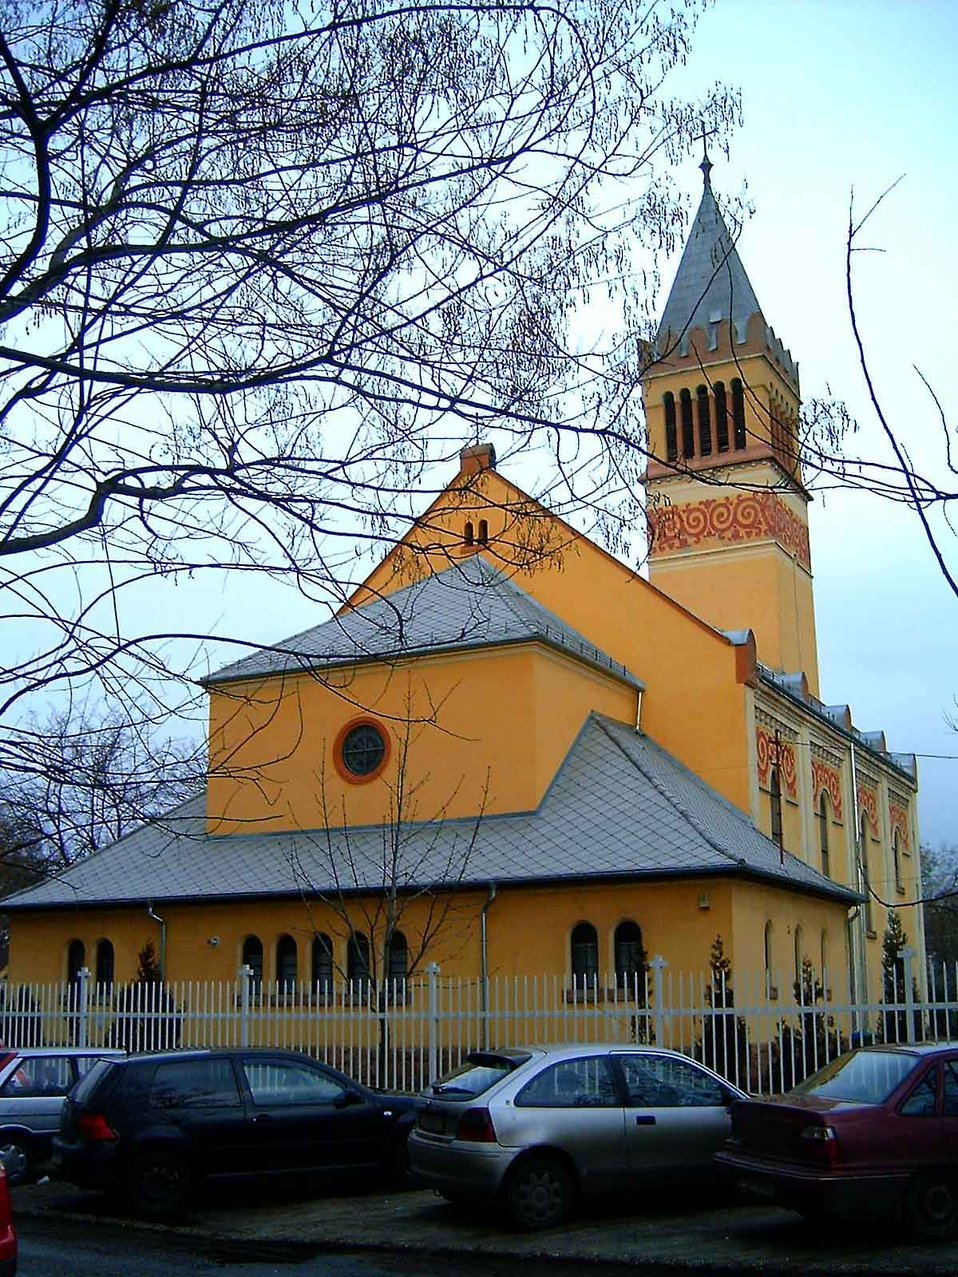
Magyar: Kispesti Evangélikus Templom hátul Deutsch: Evangelische Kirche Kispest, Rückansicht (19. Bezirk in Budapest) Protestant church in Kispest, backside (19th district in Budapest)